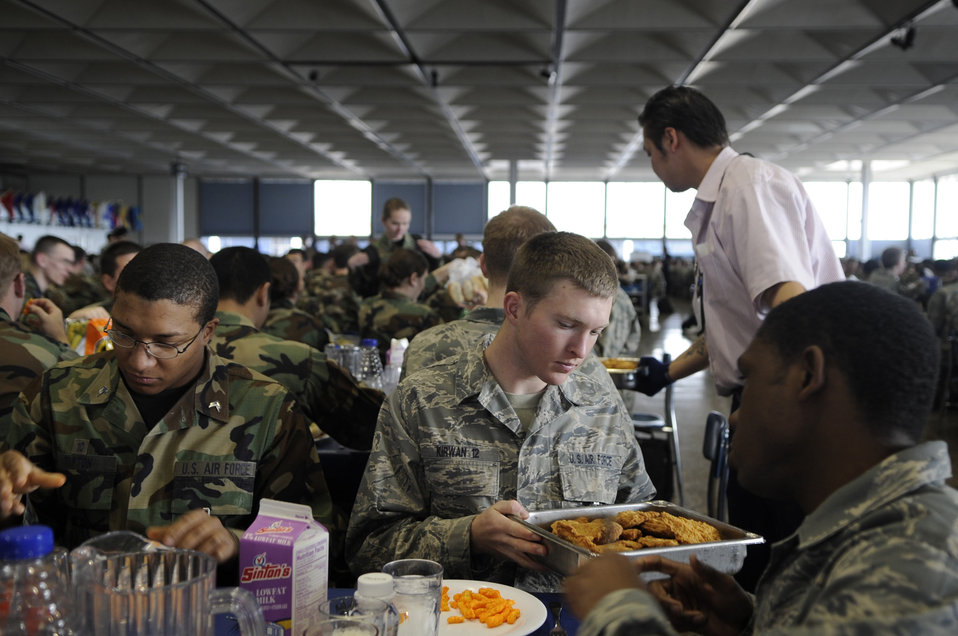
U.S.Air Force Academy Mitchell Hall Cadet Dining Facility

Cadets pass around fried chicken during lunch Jan. 23 at Mitchell Hall Cadet Dining Facility at the U.S. Air Force Academy in Colorado Springs, Colo. The dining facility feeds approximately 4450 cadets and sits on 1.75 acres.